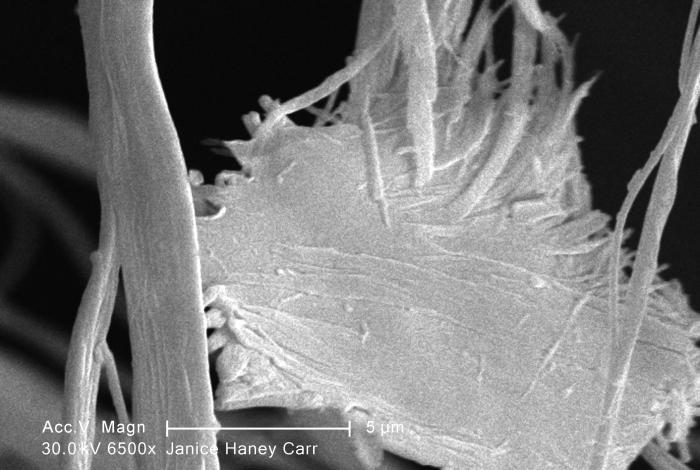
Under a high magnification of 6500X, this scanning electron micrograph (SEM) revealed some of the microcrystalline ultrastructure exhibited by a piece of raw chrysotile, or white asbestos, which had been excavated from the Lowell Asbestos Mine on Belvidere Mountain, Vermont.